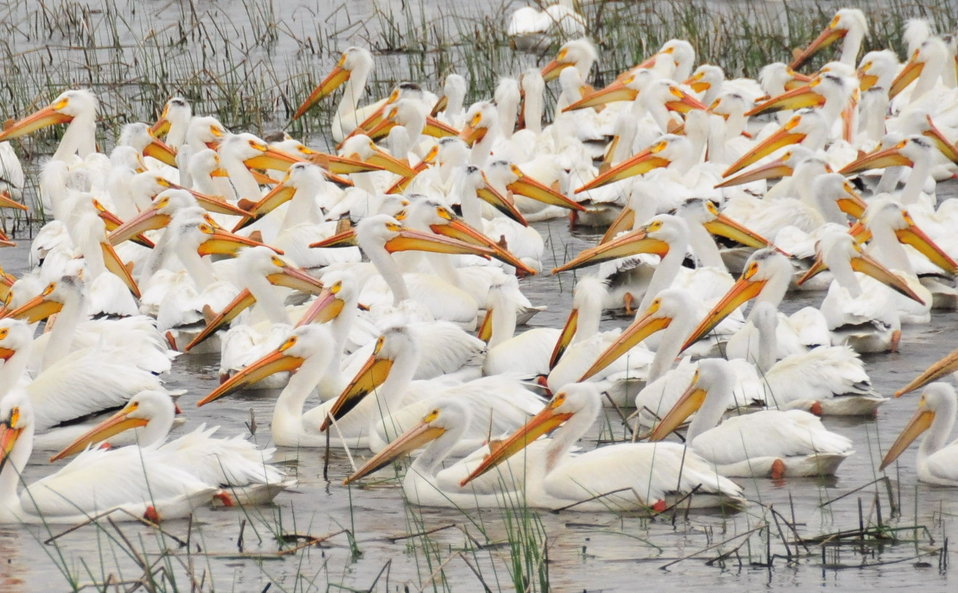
American White Pelican Feeding on Lacreek NWR 1

A large group of American White Pelicans feed together as a group on Lacreek NWR.